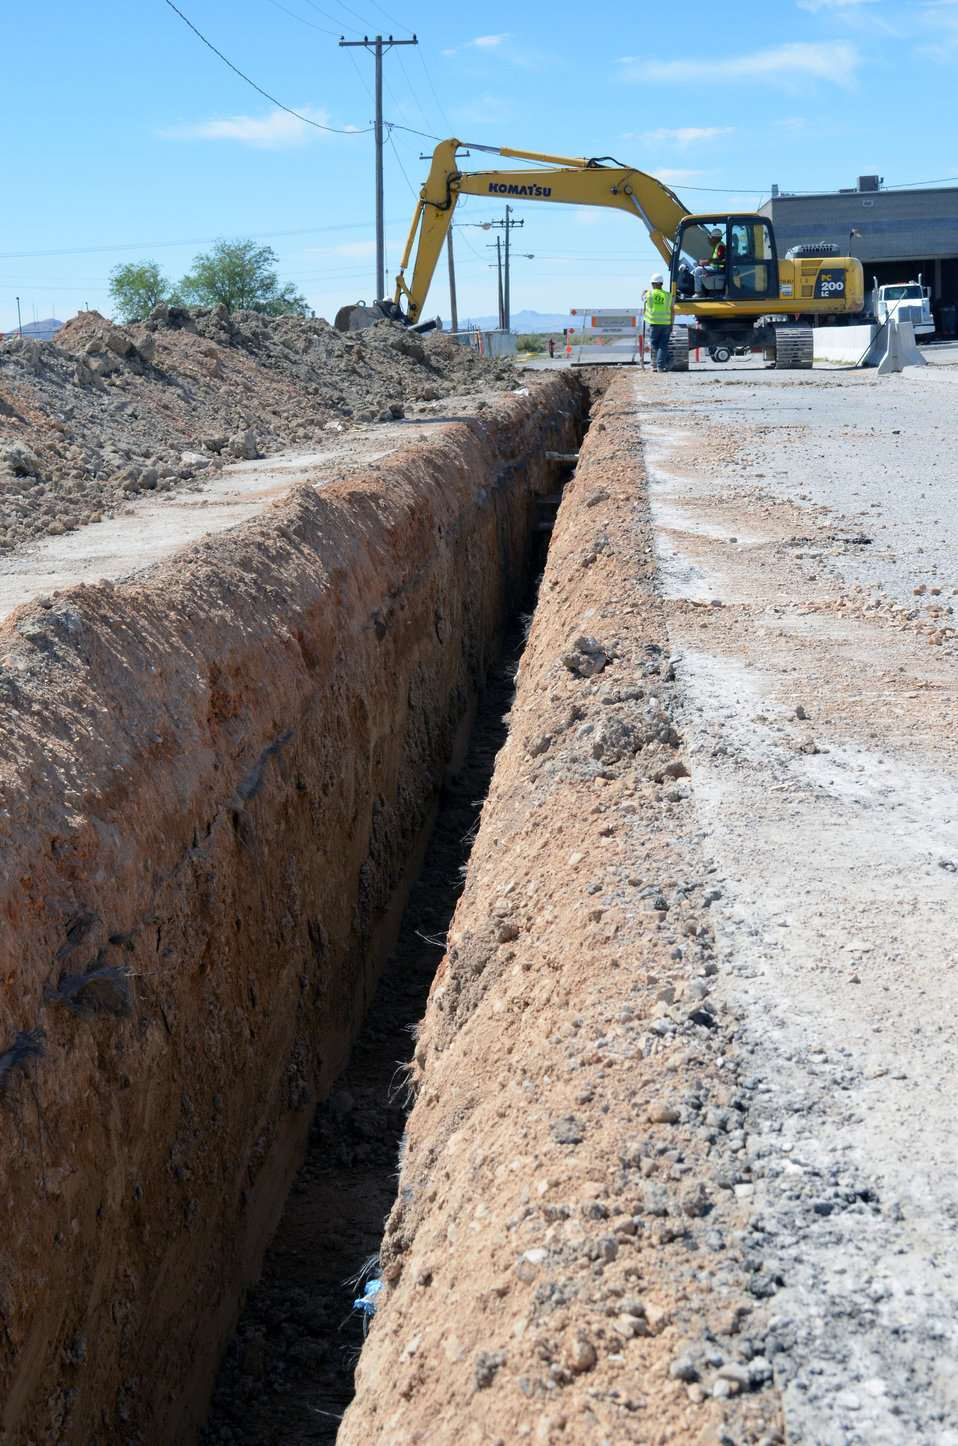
Water system project continues at Dugway Proving Grounds

Contractors for the U.S. Army Corps of Engineers Sacramento District excavate a trench for new water lines at Dugway Proving Grounds, Utah, June 21, 2012. The work is part of an $11 million project to provide a new potable water system to the installation.